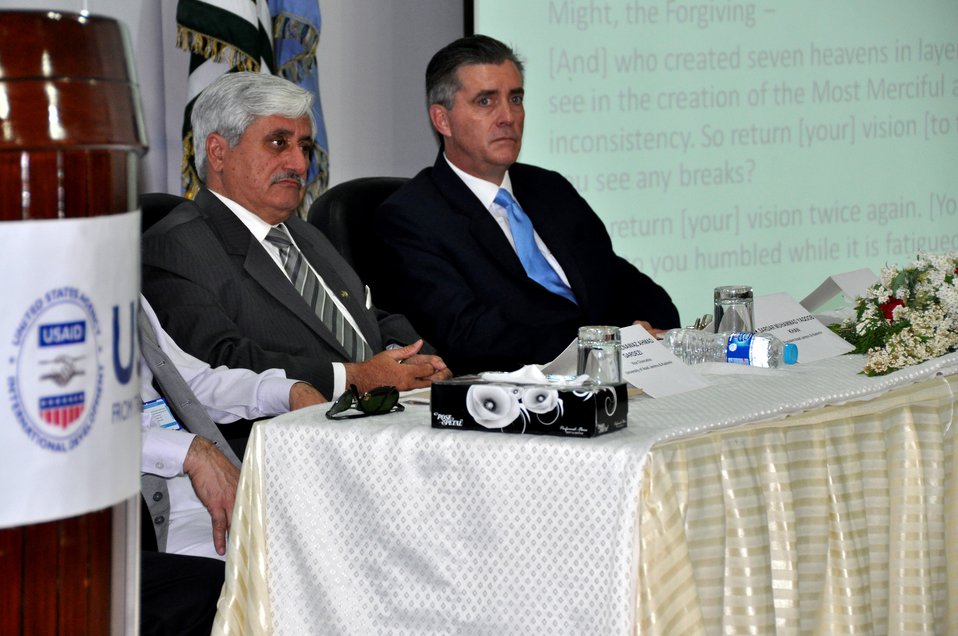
The United States Ambassador to Pakistan, Richard Olson broke ground for a U.S. funded construction of a new Faculty of Education building in Muzaffarabad, AJK. 06